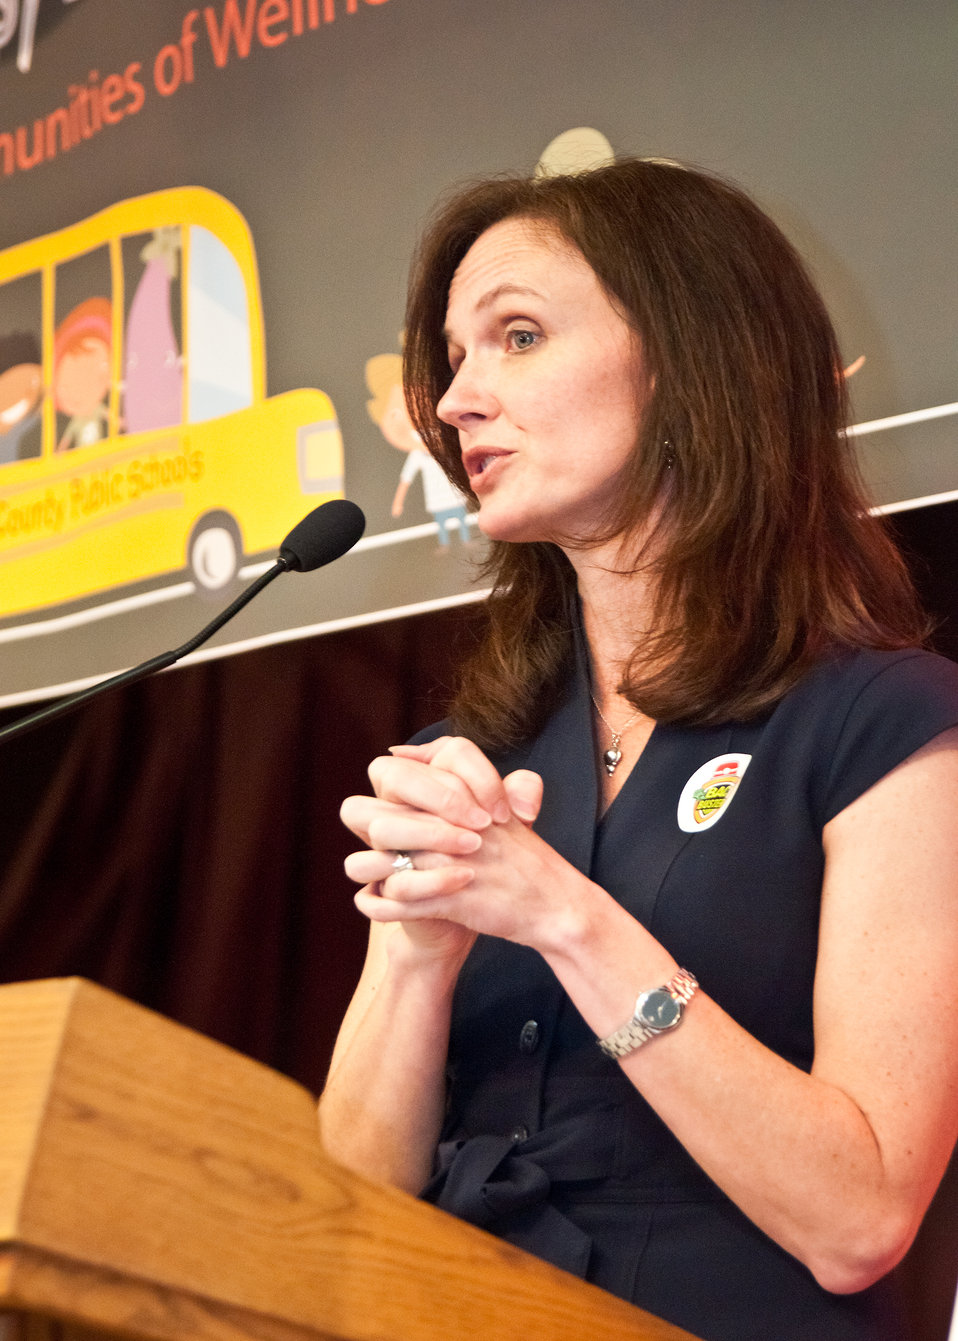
Dr. Elizabeth Hagen, Undersecretary, Food Safety explains the importance of good nutrition and exercise to students at Maryland City Elementary School in Laurel, Maryland during a United States Department of Agriculture, Food Safety Inspection Service, Food Safety Education Camp on Thursday, May 5, 2011.